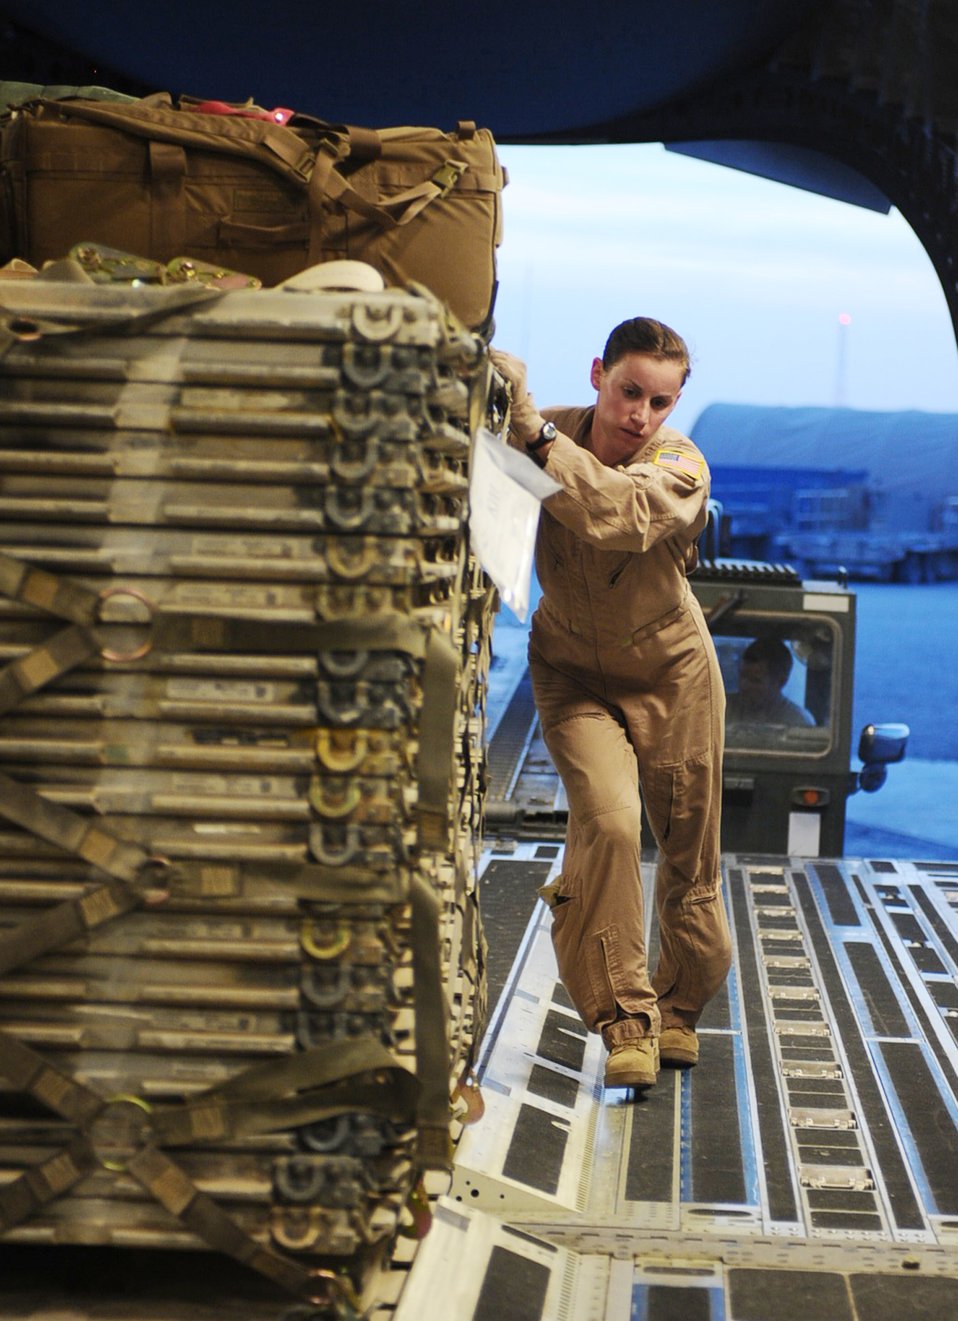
C-17 flight commemorates Women's History Month

First Lt. Erica McCaslin, 816th Expeditionary Airlift Squadron pilot, pushes a pallet onto a C-17 Globemaster III March 10, 2010, for shipment at an air base in Southwest Asia. Lieutenant McCaslin was part of an all-female crew in honor of Women's History Month and is deployed from the 14th Airlift Squadron at Charleston Air Force Base, S.C.